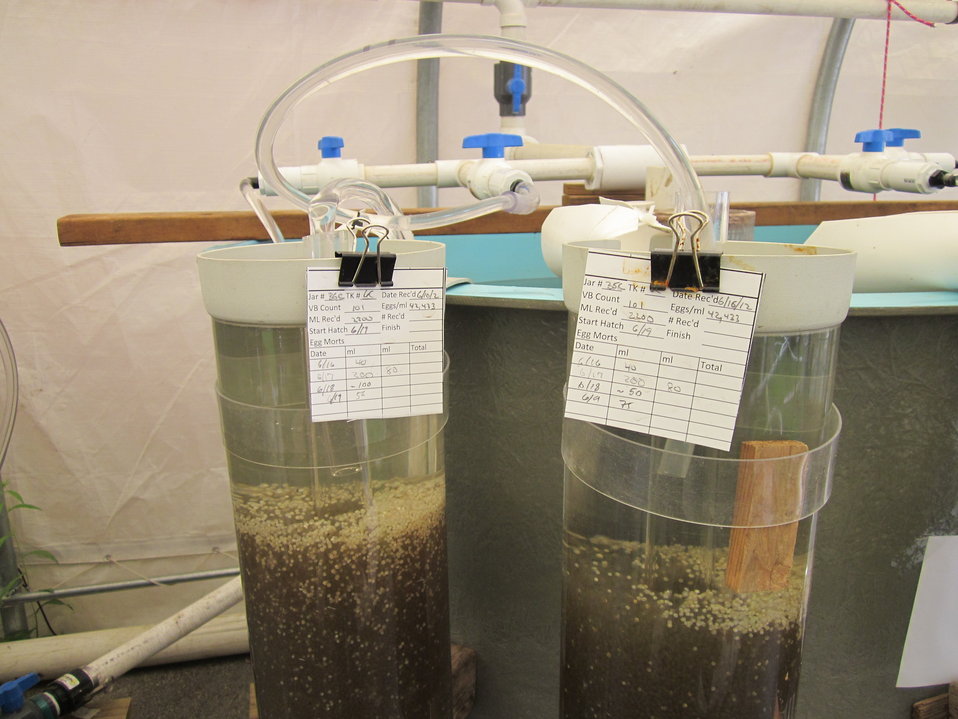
American shad egg chambers

North Attleboro, MA, June 2012: Thousands of American shad eggs wait to hatch at North Attleboro National Fish Hatchery. White flecks indicate eggs that have died.

Fish biologists capture adult shad from the Merrimack and Connecticut Rivers and transport them to the hatchery where tank spawning occurs. The fertilized eggs flow through a drain to a control box where they are collected and placed into egg cylinders hung around tanks. When the shad larvae hatch in about 4 days, they swim into the tanks through chutes at the top of the cylinders. The larvae are marked with oxytetracycline and released after a few days, for a turnaround time of about a week from egg to release in the Merrimack and Charles Rivers.

In 2012, the hatchery quadrupled past production for a projected total of 7-8 million shad.